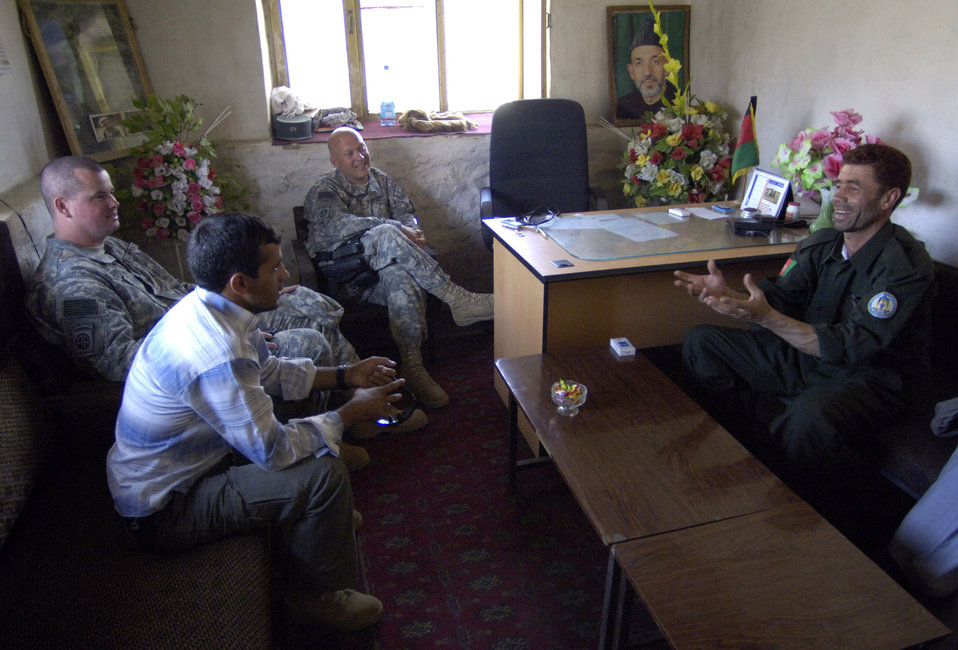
Airmen go hand-to-hand with Afghan National Police

Panjshir Provincial Reconstruction Team commander Lt. Col. Christopher Luedtke (center) and Tech. Sgt. Michael Downey visit with Anaba district police chief Zardot Towhidi (right) and an interpreter Aug. 6. Colonel Luedtke brought members of his PRT to the Anaba district of Panjshir province, Afghanistan, to provide training to Afghan National Police serving in the area. Colonel Luedtke is deployed from Hill Air Force Base, Utah. Sergeant Downey is a security forces craftsman deployed from the Pentagon, Washington, D.C.